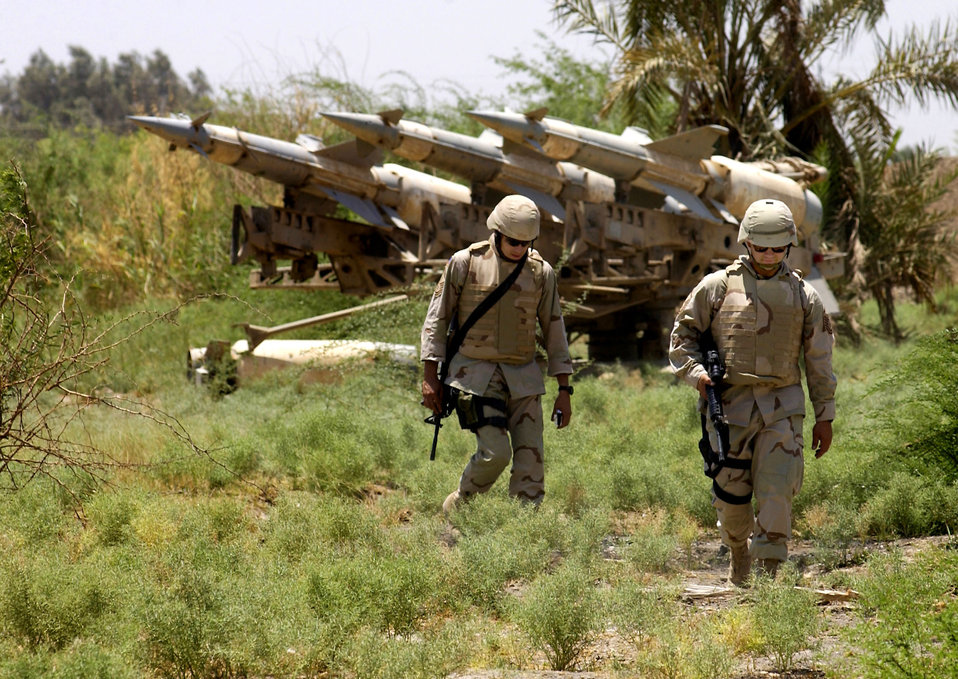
Abandonded site

OPERATION IRAQI FREEDOM -- Senior Master Sgt. Brian Aguiar and Master Sgt. Brad Kephart move on after investigating a disabled and abandoned Iraqi antiaircraft missile battery near Baghdad, Iraq. The airmen are with the 1st Expeditionary Air Operations Support Squadron and deployed from the 1st Air Operations Support Squadron at Baumholder, Germany.